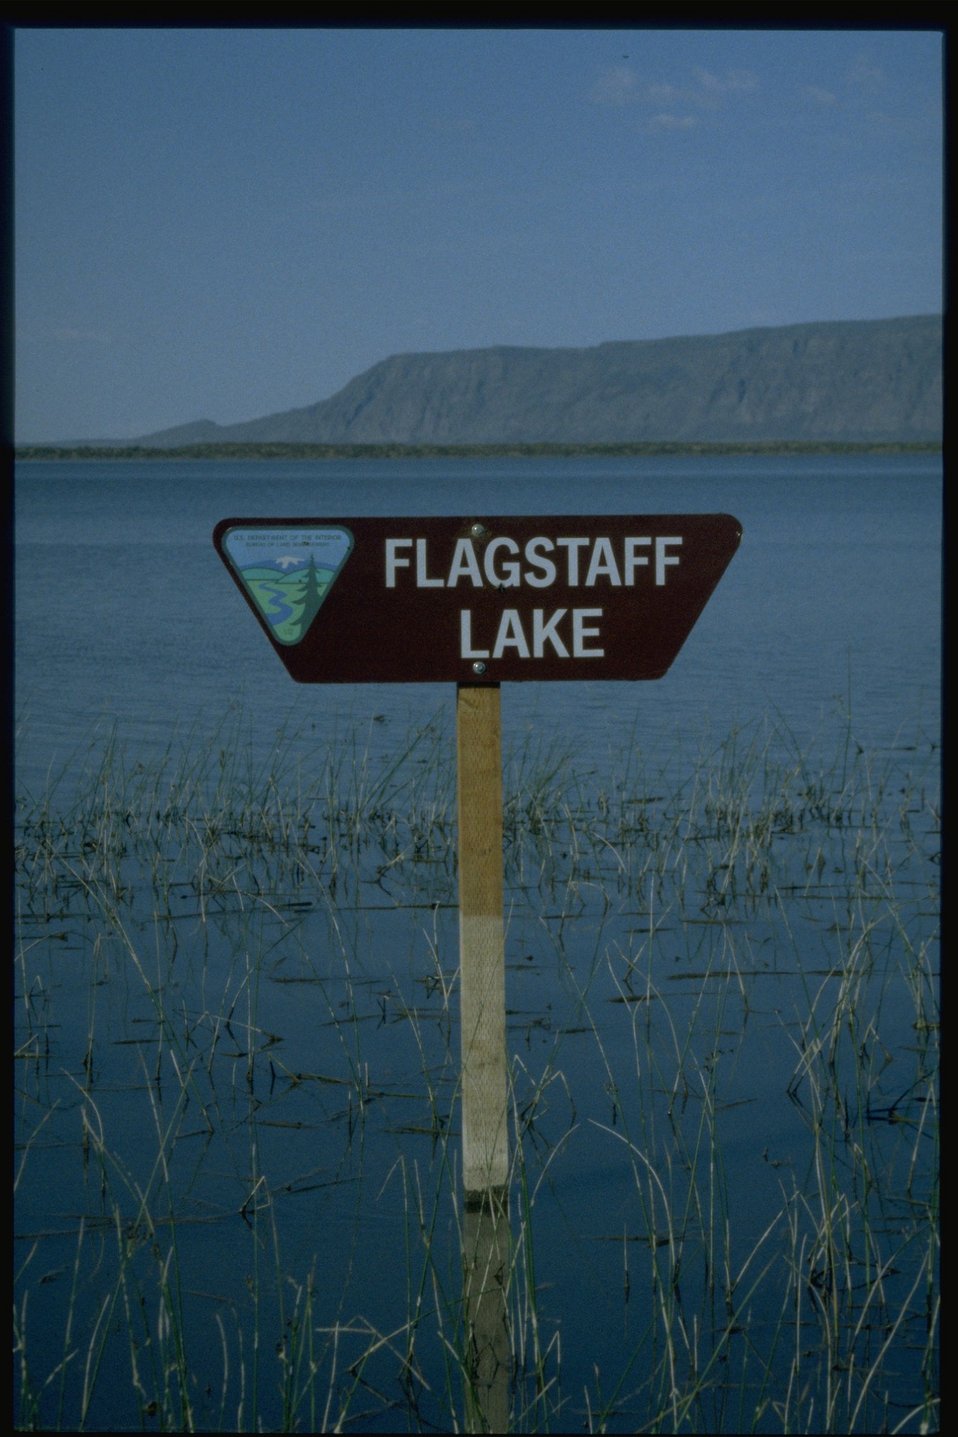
Flagstaff Lake.